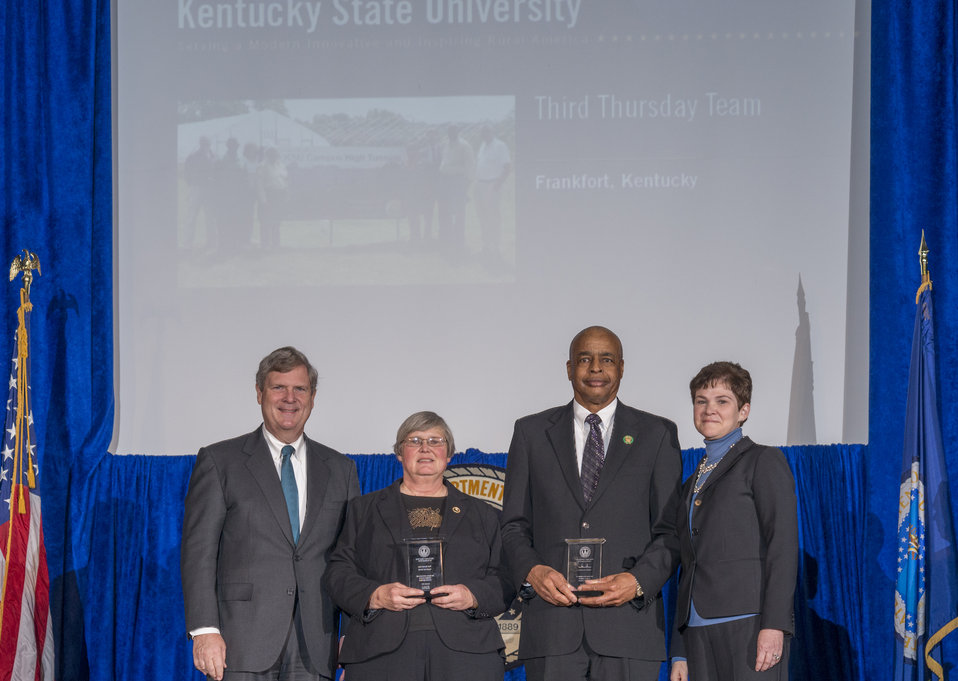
Agriculture Secretary Tom Vilsack and Agriculture Deputy Secretary Krysta Harden present the Secretary’s Honor Award to the Third Thursday Team, Kentucky State University, in Frankfort, KY Team leaders Marion Simon, Ph.D. and Louie Rivers, Jr. at the 2013 Secretary's Honor Awards in the Jefferson Auditorium at the U.S. Department of Agriculture (USDA) in Washington, D.C. on Wednesday, Dec, 11, 2013.